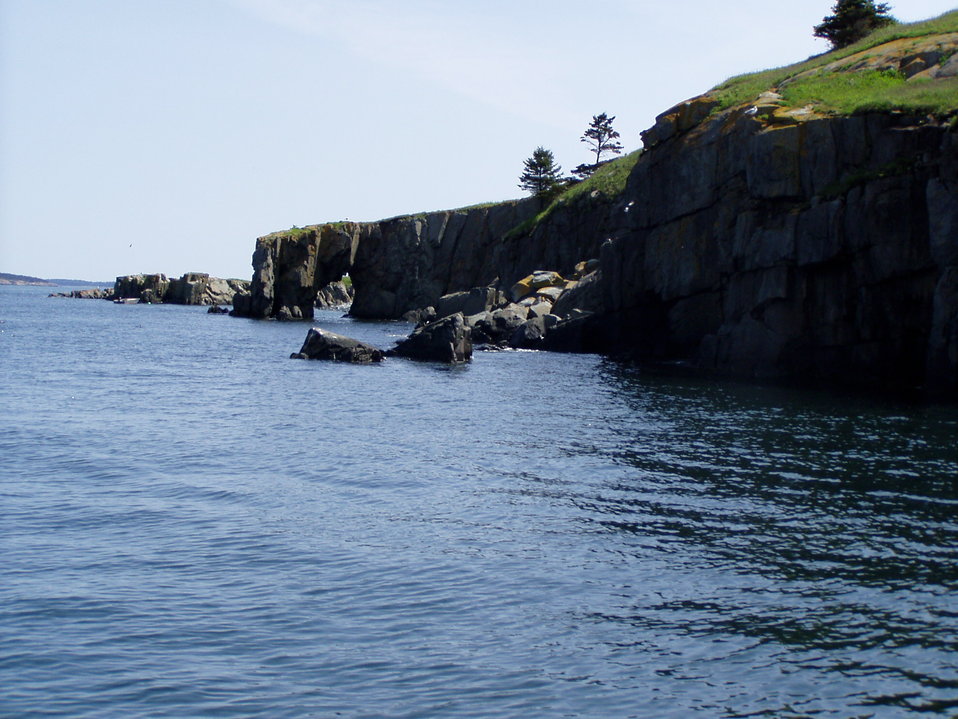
Natural bridge on Jordan's Delight Island at Maine Coastal Island National Wildlife Refuge